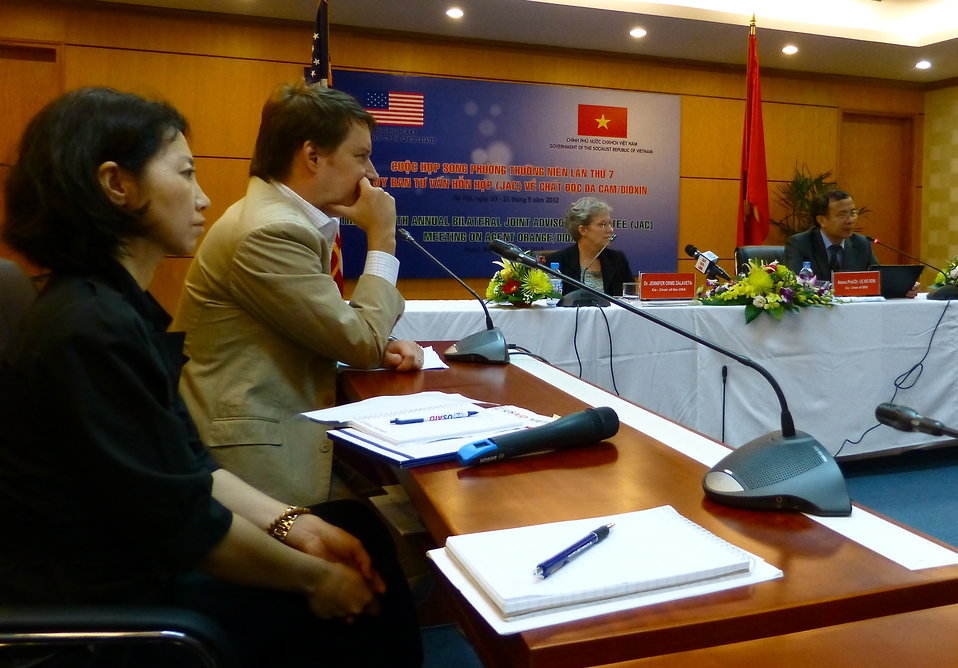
Press Conference at the 7th Joint Advisory Committee Meeting in Hanoi

Hanoi, September 21, 2012